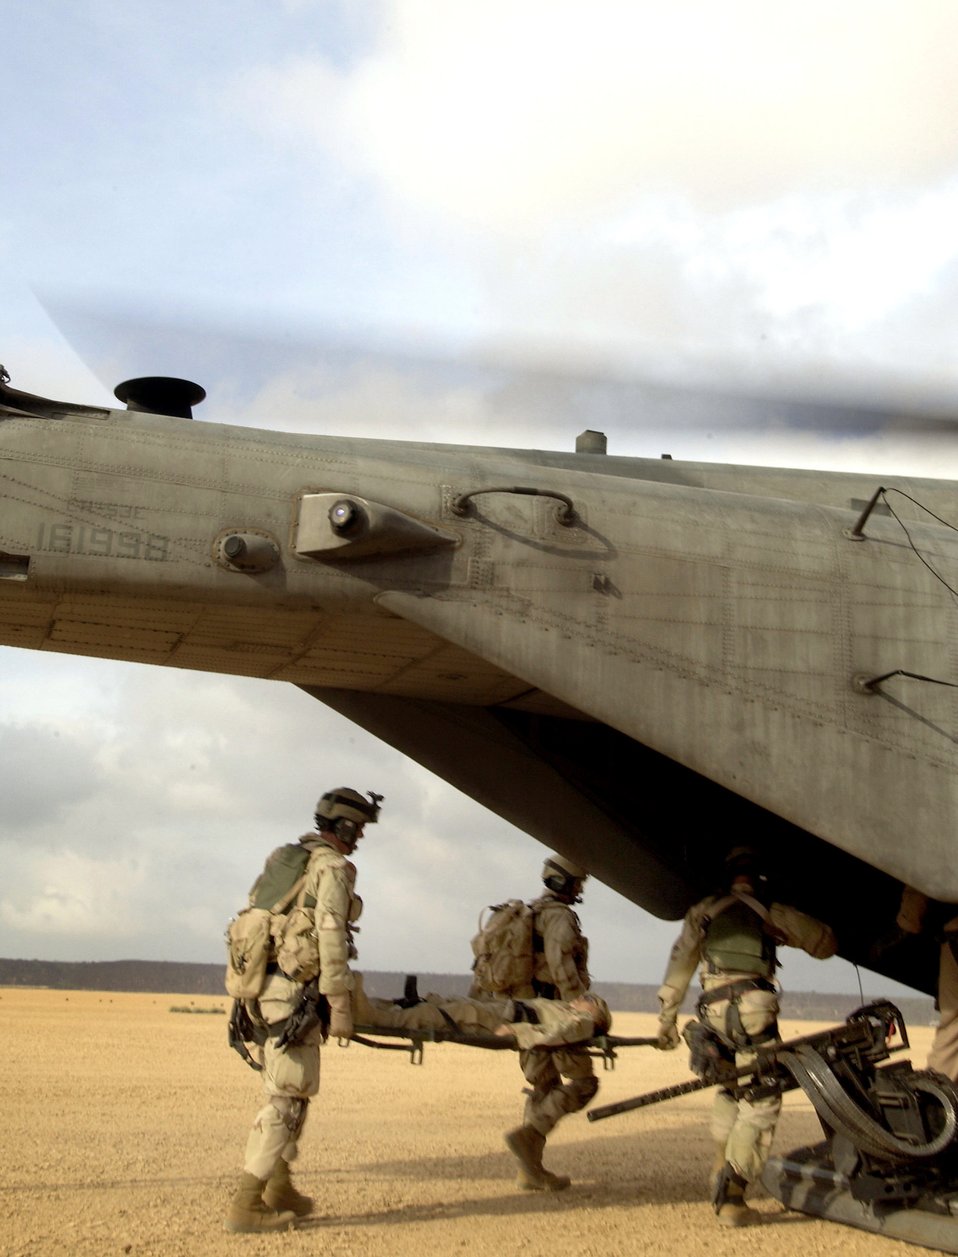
Search and rescue

CAMP LEMONIER, DJIBOUTI, Africa (AFPN) -- Capt. Jessica Maverick, simulating a car crash victim, is carried on a stretcher by Air Force pararescuemen into a Marine CH-53 Super Stallion helicopter during a search and rescue exercise here Feb. 8.